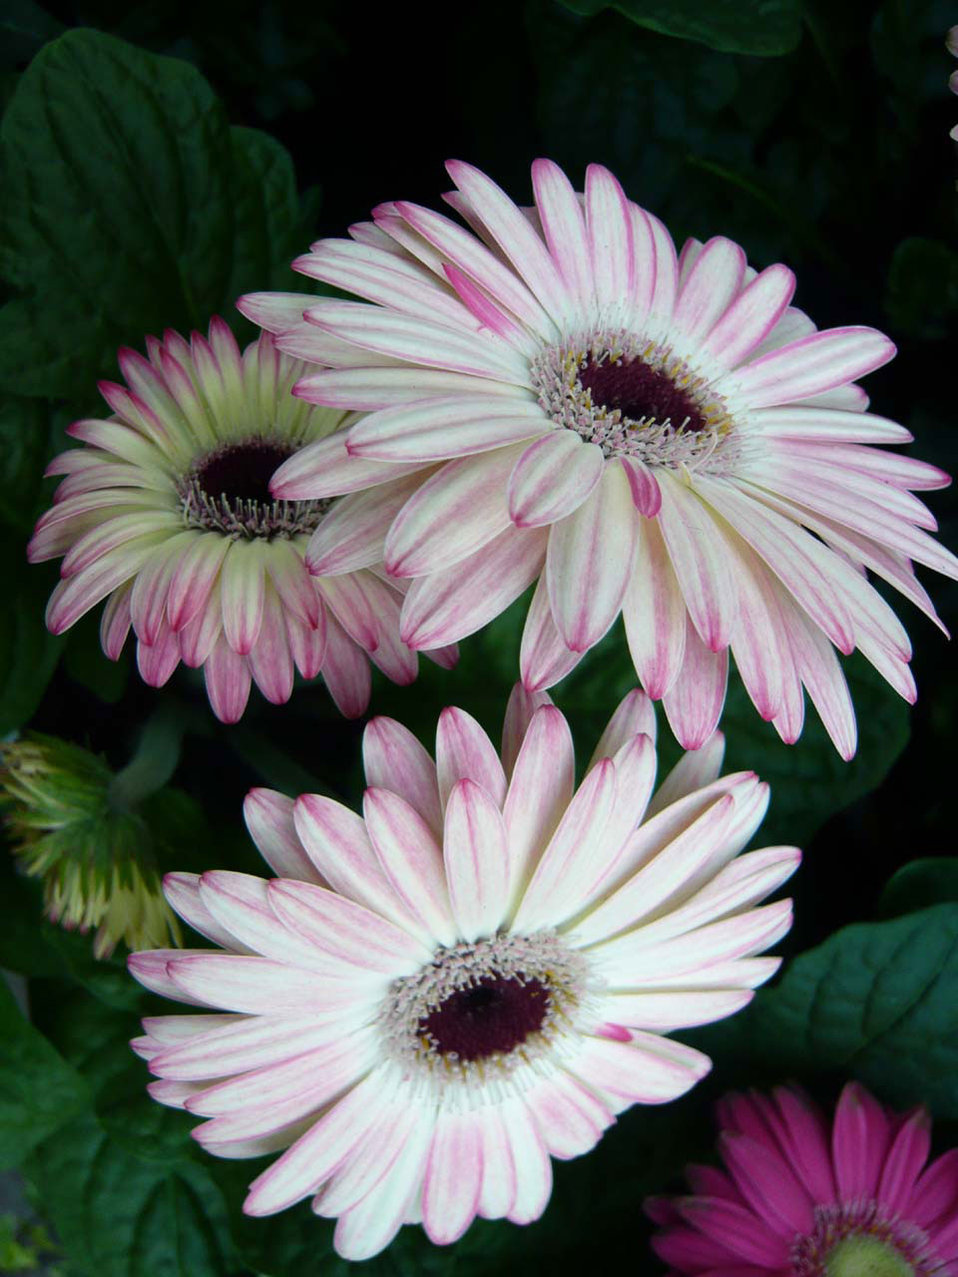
Flowers

Close-up of pink and white flowers.